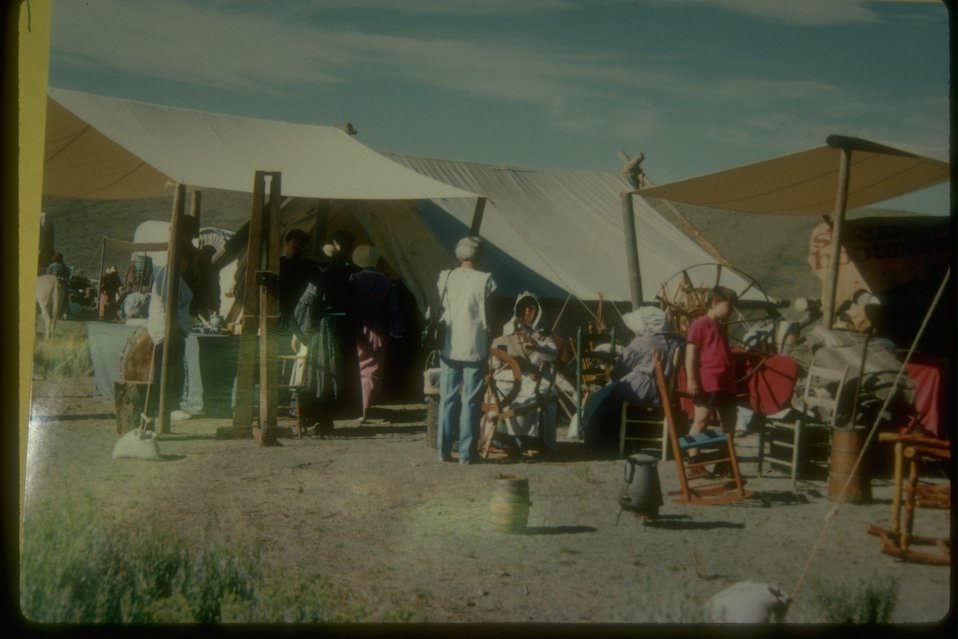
A cultural event replicating an old camp site in the middle of the rangeland. It looks like a tent city. People are dressed as pioneers showing old chairs, spinning wheels, and other exhibits.